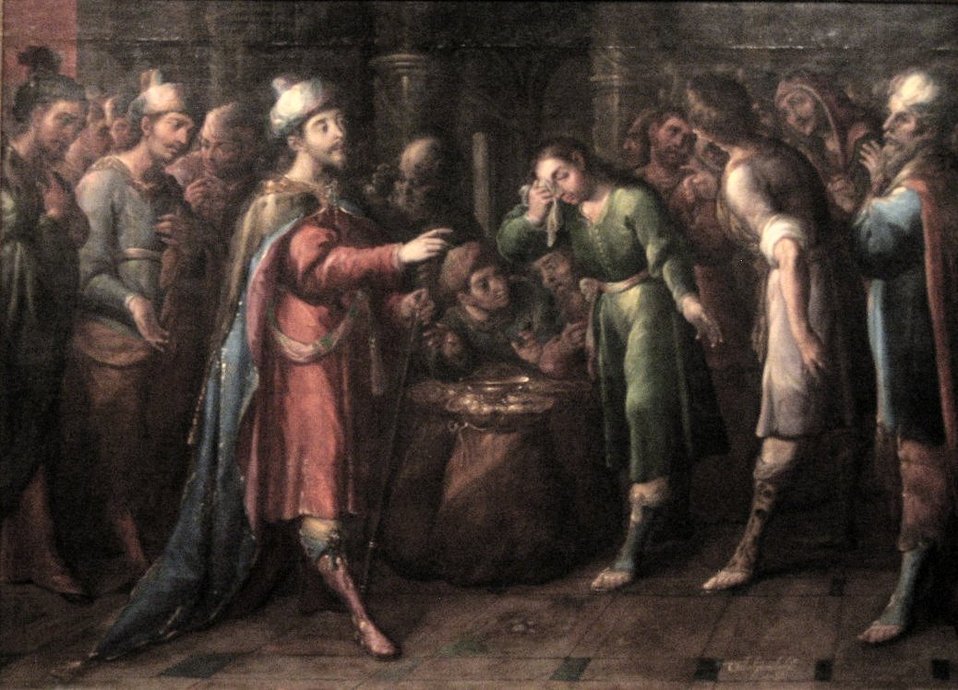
'Joseph Claims Benjamin as his Slave', painting by Cristóbal de Villalpando, 1700-1714, Denver Art Museum